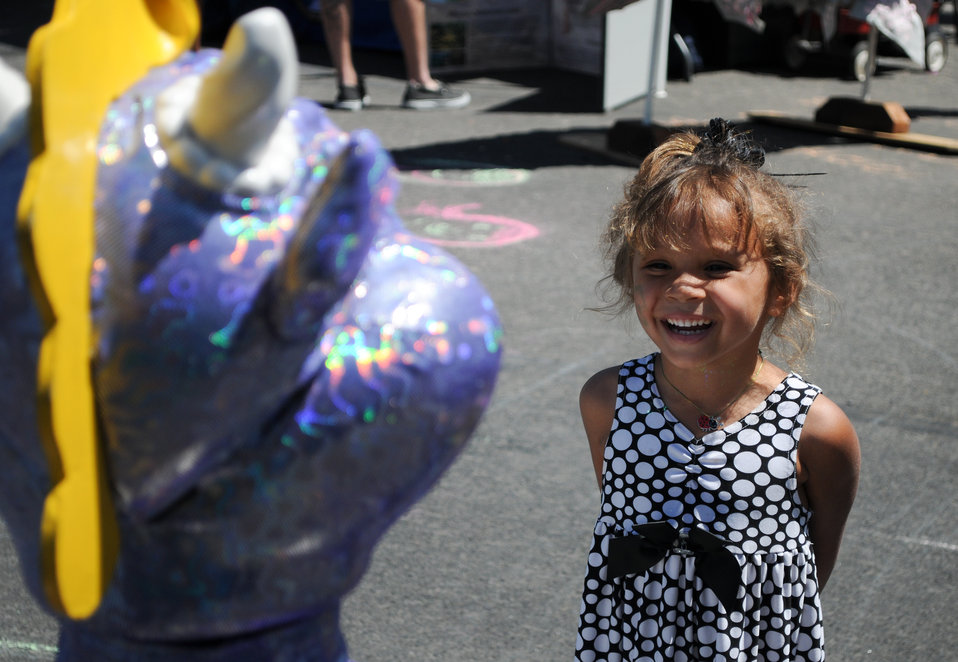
Stockton Steelhead Festival

STOCKTON, Calif. (May 1, 2011) – Corps water safety mascot Seamoor the sea serpent explains the importance of life jackets at the first-ever Stockton Steelhead Festival here May 1. New Hogan Dam, managed by the U.S. Army Corps of Engineers Sacramento District, helps reduce Stockton’s flood risk and impounds the Calaveras River, Stockton’s main water supply. New Hogan Lake park rangers brought Seamoor to the event to talk about water safety and the importance of maintaining a healthy watershed to helping the steelhead population recover. “With the summer recreation season coming up, it’s a good time to be reminding everyone about ways to stay safe when they’re on the lake,” New Hogan park ranger Gary Basile said. Steelhead trout are listed by the U.S. Fish and Wildlife Service as a threatened species in the rivers of California’s Central Valley.